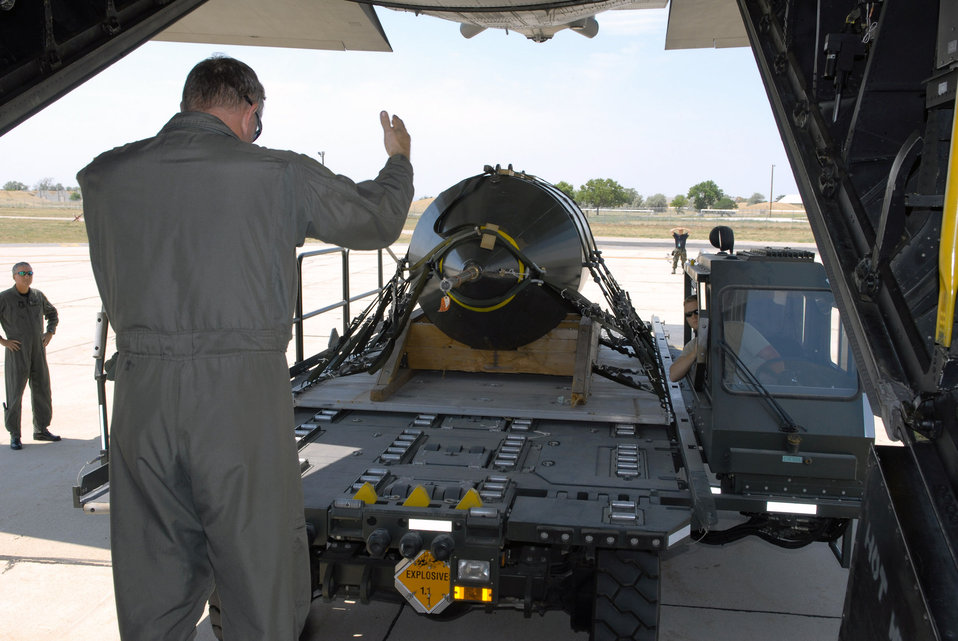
Duke Field Airmen drop 15,000-pound bomb

Tech. Sgt. Brian Scott guides the uploading of the last 15,000-pound BLU-82 bomb aboard an MC-130E Talon I shortly before it was dropped July 15 at the Utah Test and Training Range. Sergeant Scott is a loadmaster with the 711th Special Operations Squadron, Duke Field, Fla.